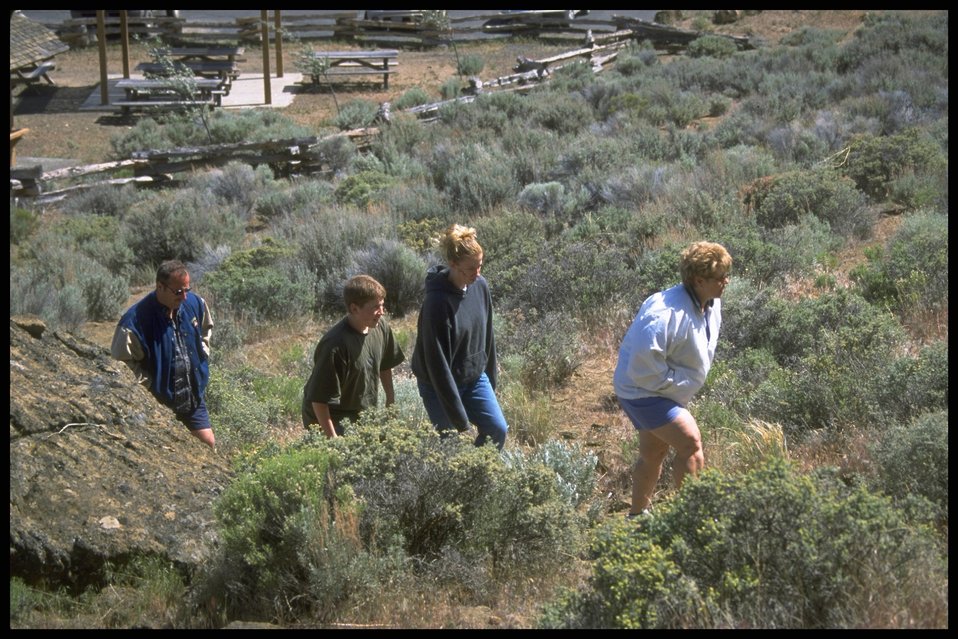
Tourists hiking at Fr. Rock, Lakeview District.